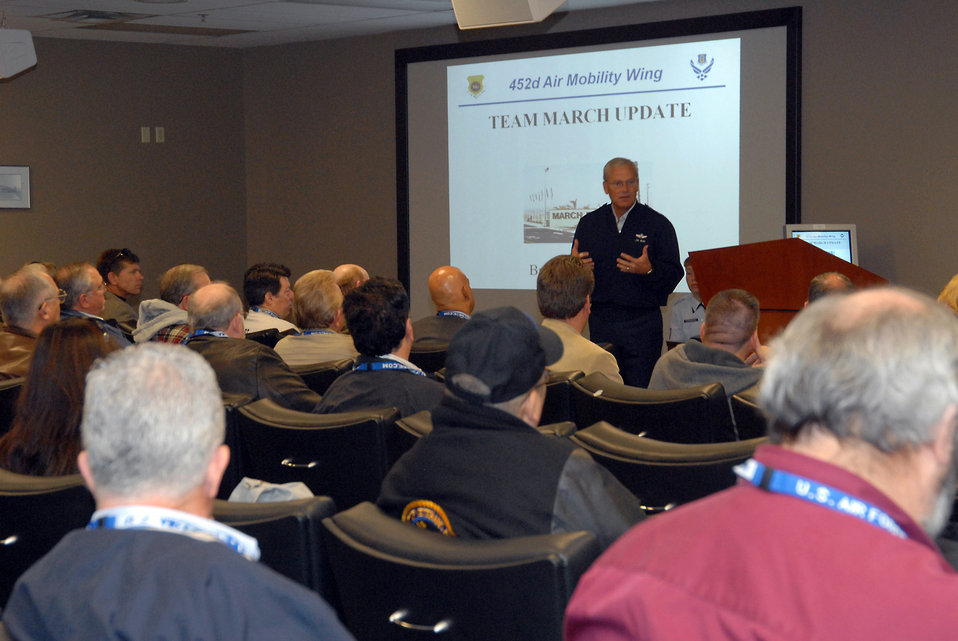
C-17 civic leader orientation flight

Brig. Gen. James Melin, 452nd Air Mobility Wing commander at March Air Reserve Base, Calif., briefs civic leaders including local mayors before flying on a C-17 Globemaster III orientation flight Nov. 10 as part of Air Force Week-Los Angeles activities.